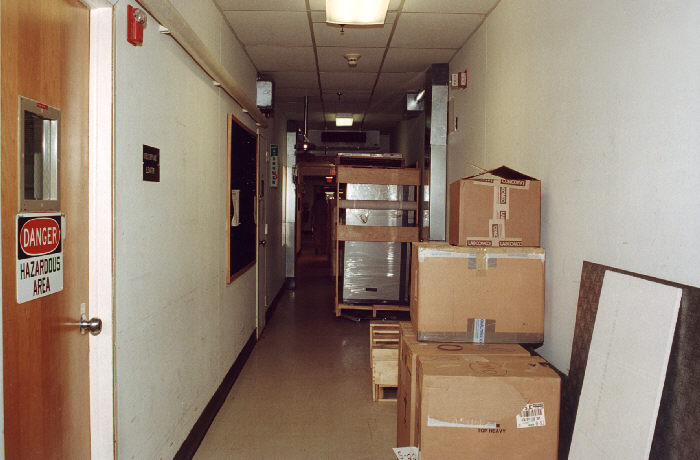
Building 17, Chamblee CDC, corridor